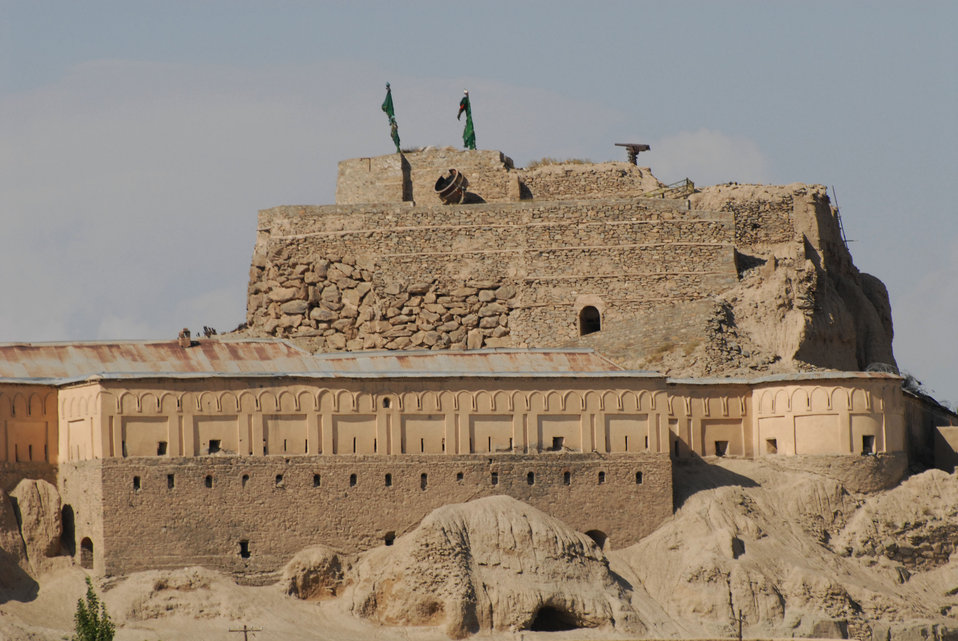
'On the Road' in Paktya Province